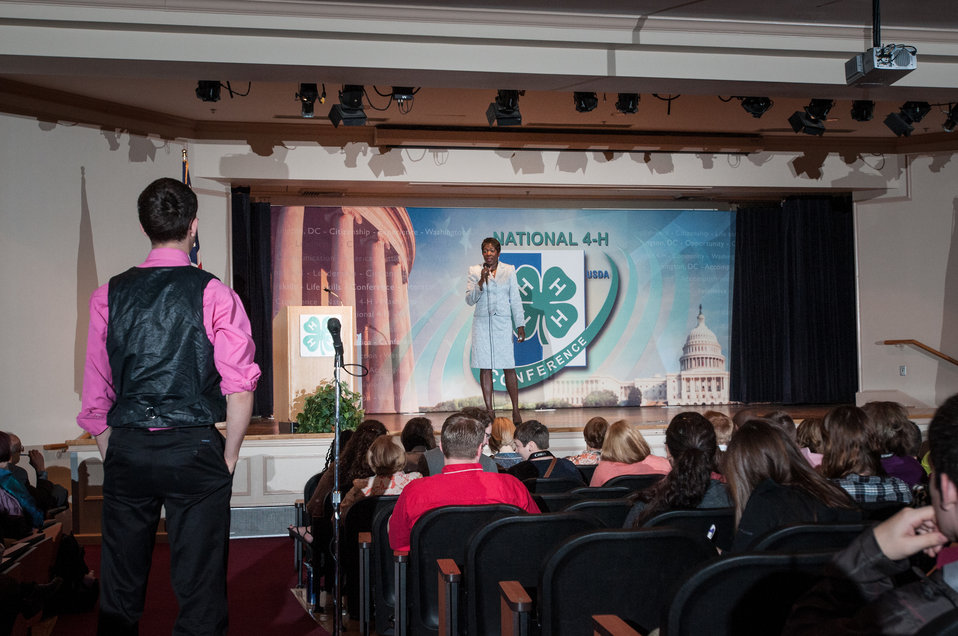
U.S. Department of Agriculture (USDA) Departmental Management Office of Advocacy and Outreach Director Carolyn Parker provided opening remarks to approximately 300 youth members, Extension Educators and 4-H Adult Volunteers from across the nation,and U.S. Territories at the 2013 National 4-H Conference, on Monday, April 8, 2013 in Chevy Chase, MD. National Institute of Food and Agriculture Director Dr. Sonny Ramaswamy provide additional remarks and Agriculture Secretary Tom Vilsack will deliver the keynote address. The youth delegates are in grades 10-12 (15-19 years old). The purpose of the conference is to engage 4-H youth in personal development experiences that will increase knowledge, resources, and skills. Discuss topics affecting youth and 4-H programming nationwide. Empower and mobilize 4-H youth to create positive social change in their communities in a meaningful and genuine way. The conference also reinforces the rich history of 4-H and its valuable tie to USDA, Cooperative Extension and the Land-Grant University System.